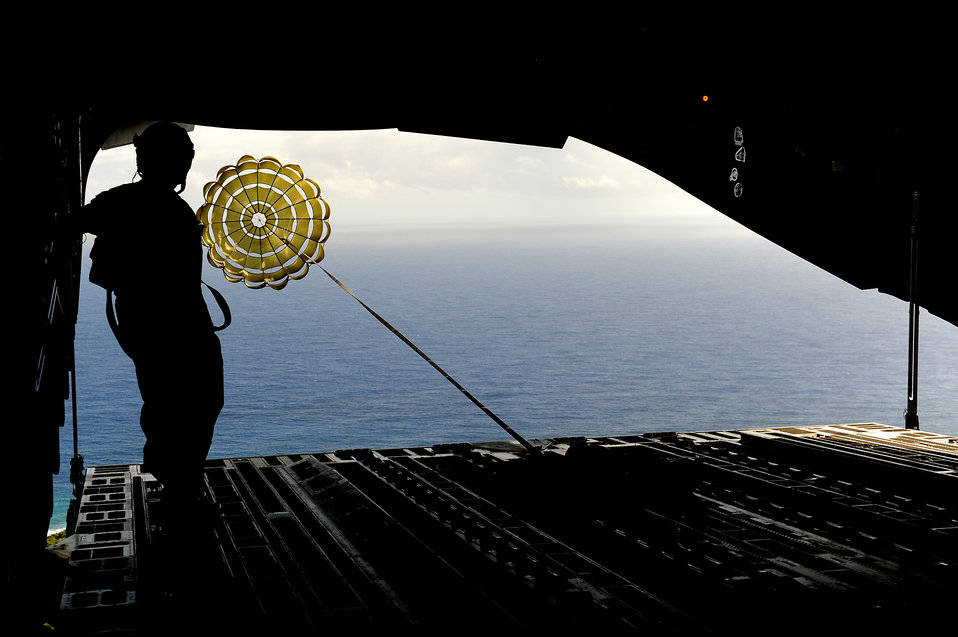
Airdrop Ops

Aircrews from the 535th Airlift Squadron dropped nine training pallets during a single day Jan. 11, 2011, while on temporary assignment to Andersen Air Base, Guam. The aircrew then helped the 36th Contingency Response Group with static line jump training.